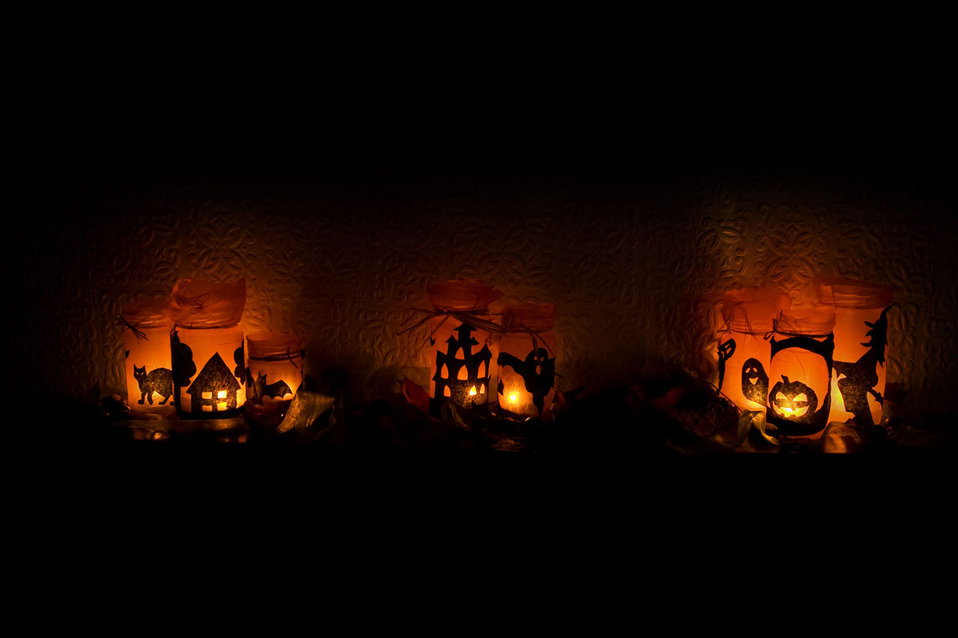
Halloween lights

Several halloween lights.